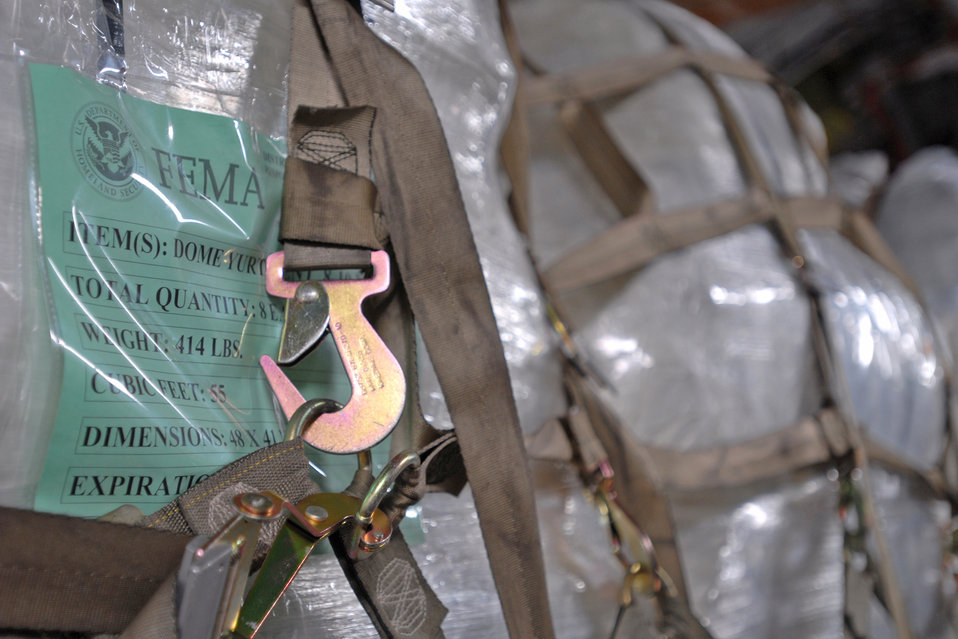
Humanitarian aid bound for tsunami relief effort

Humanitarian aid supplies from the Federal Emergency Management Agency is loaded by Hawaii Air National Guard, Hawaii National Guard and Hickam Air Force Base active-duty Airmen into a C-17 Globemaster III bound for American Samoa to assist in the relief efforts under way Sept. 30, 2009, at Hickam AFB, Hawaii. The efforts are in the wake of tsunamis triggered by an undersea earthquake Sept. 29 that has left more than 140 people dead in the South Pacific region. More than 90 Airmen and Soldiers deployed from Hawaii for the humanitarian mission.